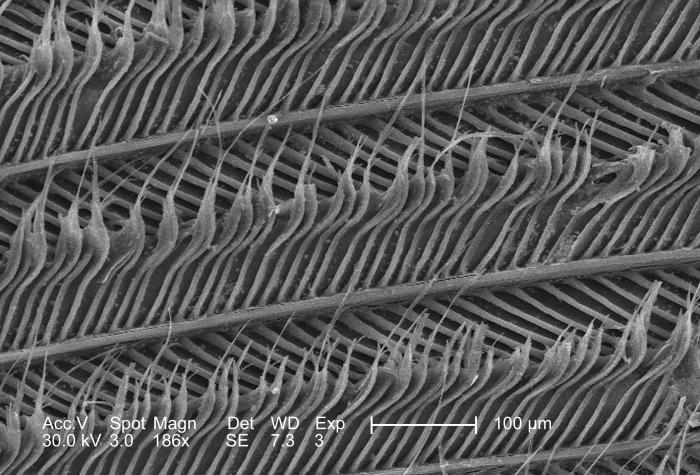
This scanning electron micrograph (SEM), at a moderate magnification of 186x, depicted the strut-like configuration of an unidentified bird feather found on the ground in the Decatur, Georgia suburbs.